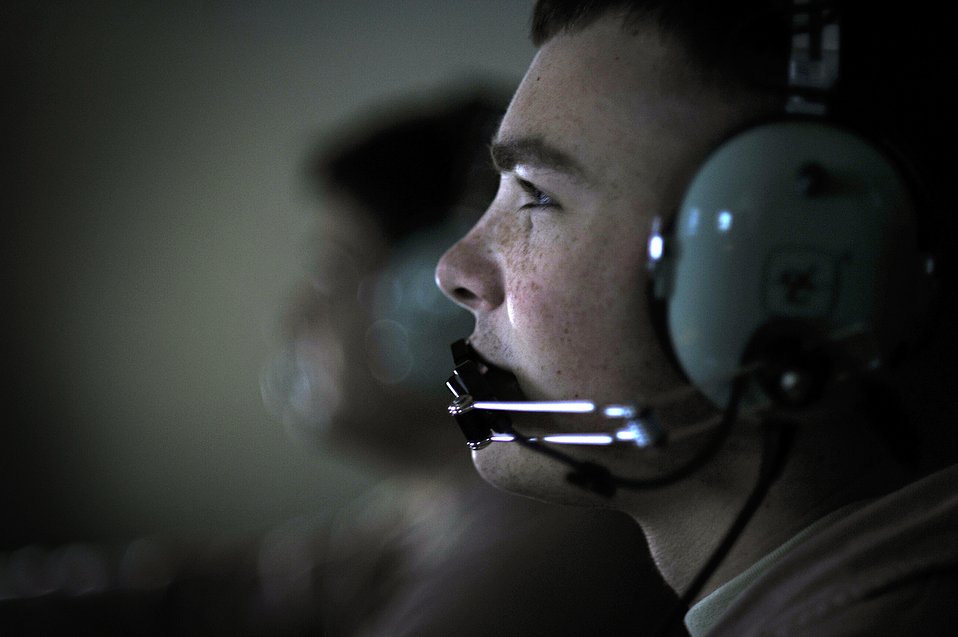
40,000 combat hours

Airman 1st Class Edmond Lipinski tracks suspected movements on radar during a E-8C Joint STARS mission over Iraq Sept. 1. The flight marked 40,000 combat hours supporting the war on terrorism for the deployed Airmen of the 116th Air Control Wing. The E-8C Joint Surveillance Target Attack Radar System is assigned to the 7th Expeditionary Air Combat and Control Squadron at an air base in Southwest Asia.